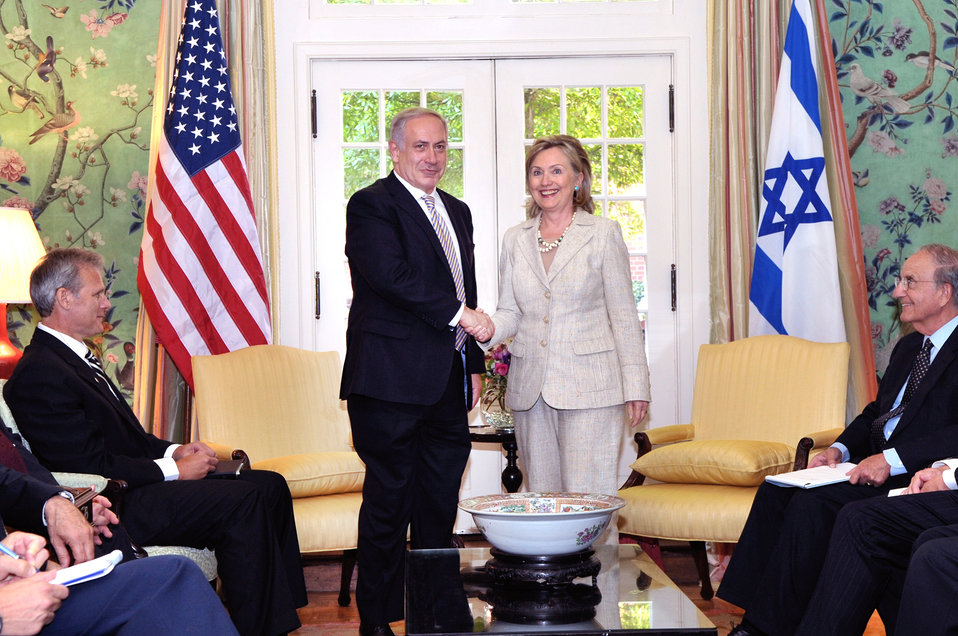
Secretary Clinton Holds a Bilateral Meeting With Israeli President Netanyahu

U.S. Secretary of State Hillary Rodham Clinton holds a bilateral meeting with Israeli President Benjamin Netanyahu at the Blair House in Washington, D.C., on July 6, 2010. U.S. Special Envoy for Middle East Peace George J. Mitchell is pictured sitting to the right of the Secretary in the photo.